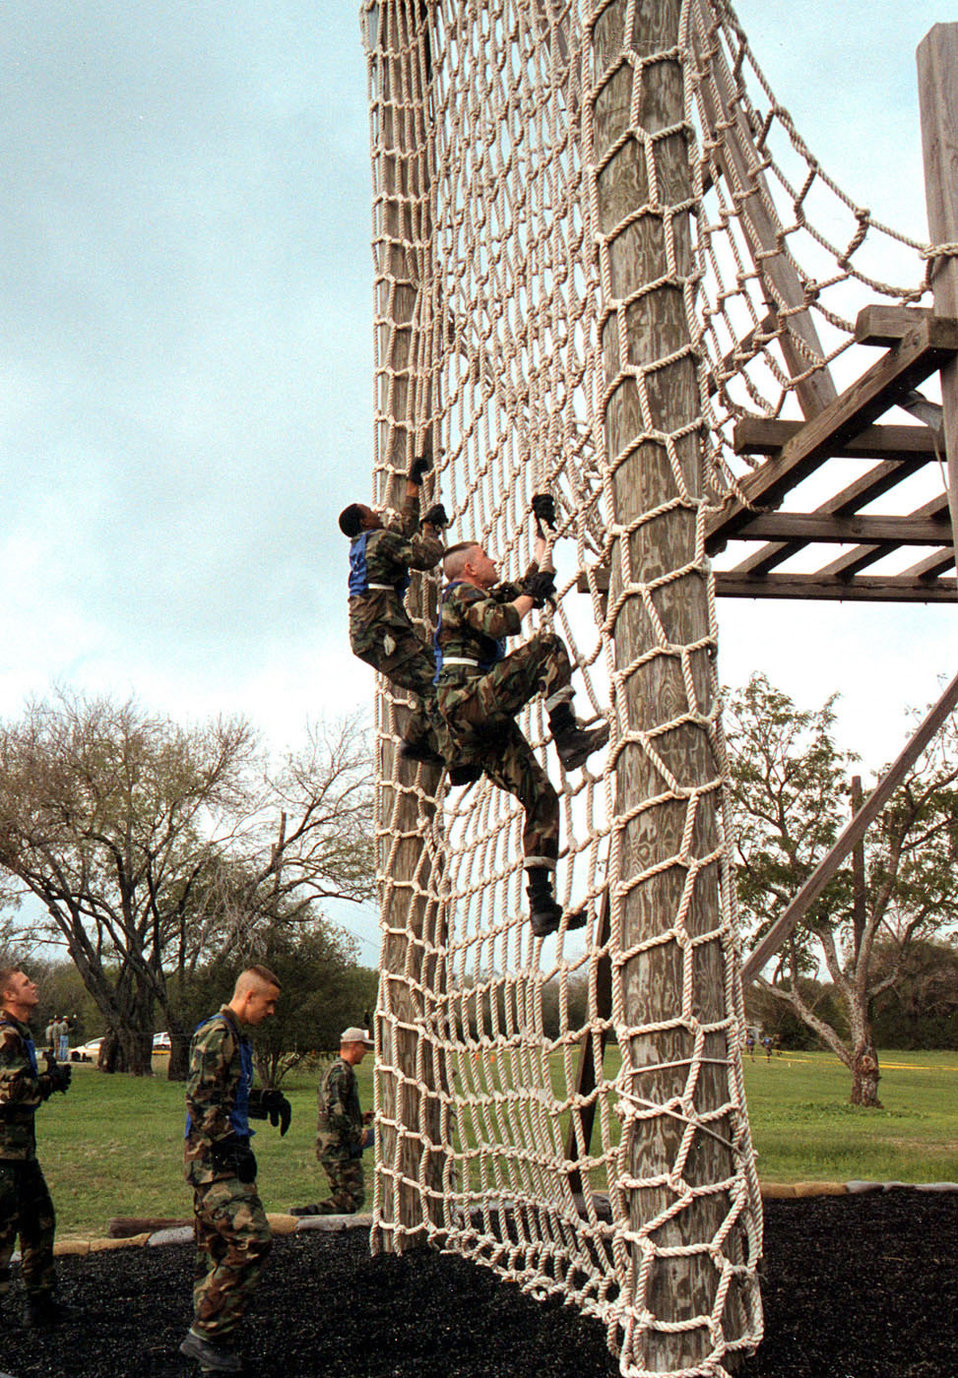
The tough one

LACKLAND AIR FORCE BASE, Texas -- 11th Wing Defender Challenge team members prepare for their climb on the